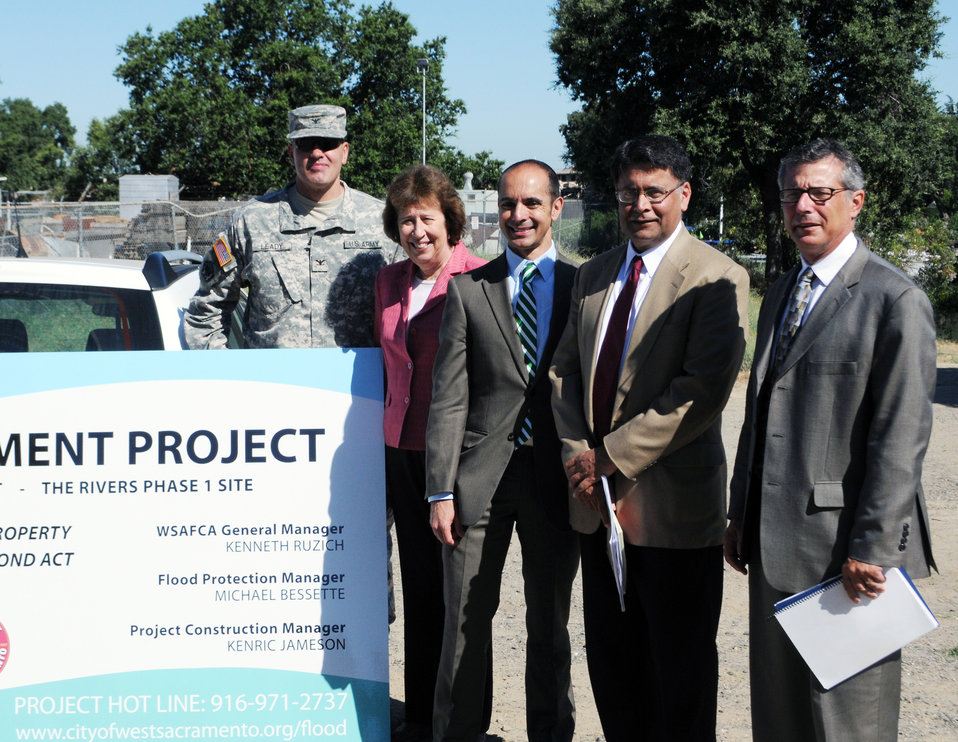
West Sacramento partners

U.S. Army Corps of Engineers Sacramento District commander Col. Bill Leady (left) stands behind West Sacramento Mayor Christopher Cabaldon (center) and other officials during a levee improvement project ground breaking ceremony in West Sacramento, Calif., July 19, 2011. Leady commended West Sacramento Area Flood Control Agency and other officials for being “truly a model partner to work with,” and for moving forward on the public safety project without any promise of federal credit for the work.